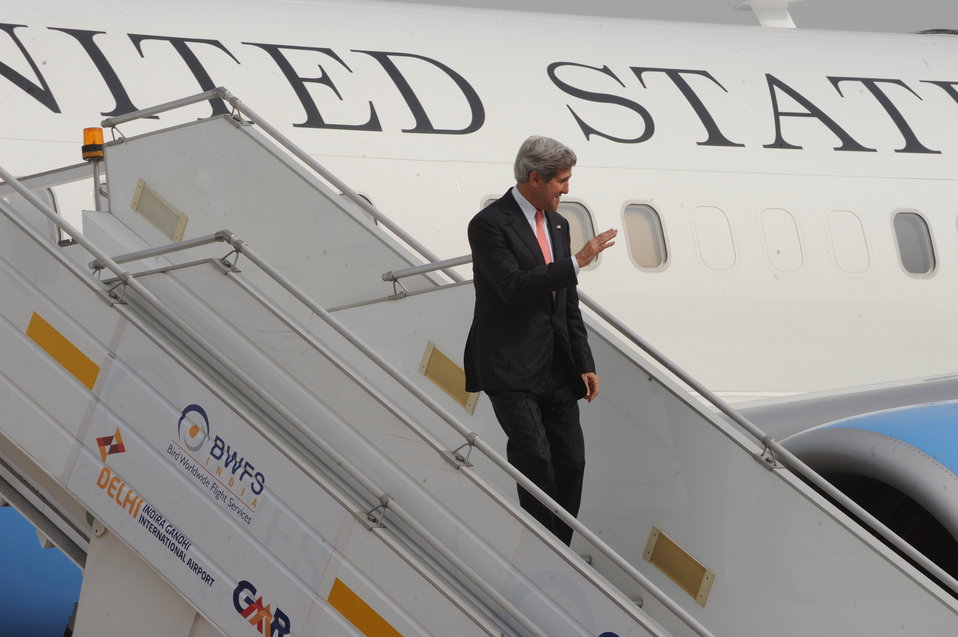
Secretary Kerry Arrives in New Delhi, India

U.S. Secretary of State John Kerry arrives in New Delhi, India on June 23, 2013.